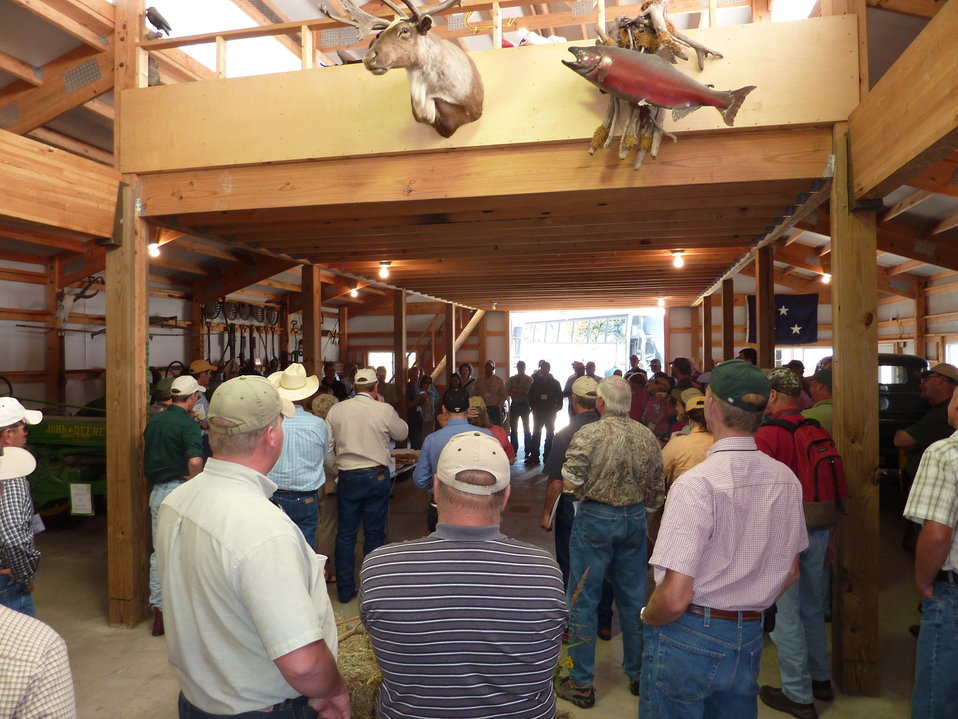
Private Lands Day 2011

South Dakota